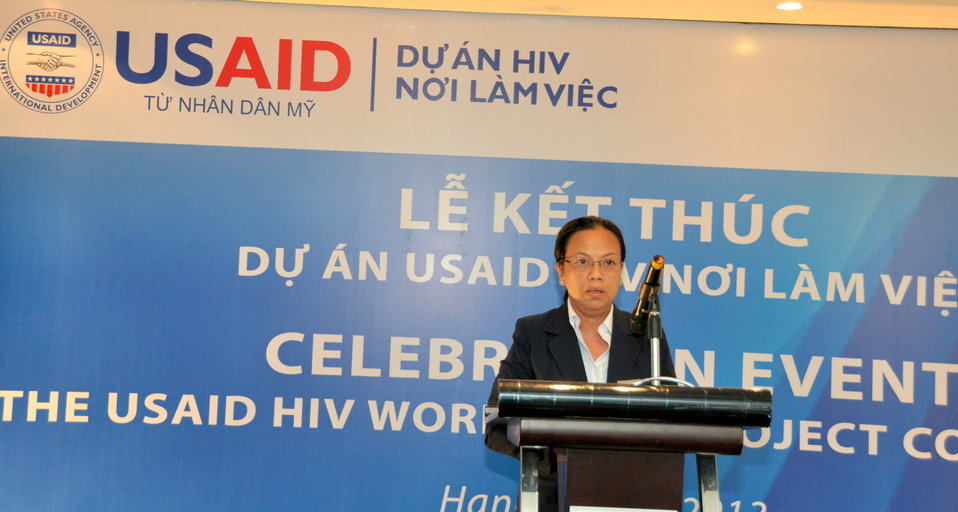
Mrs Diep Thi Hang Nga, Vice Director of Dai Viet Garment Enterprise, speaks at the completion event.

Hanoi, June 20, 2013.